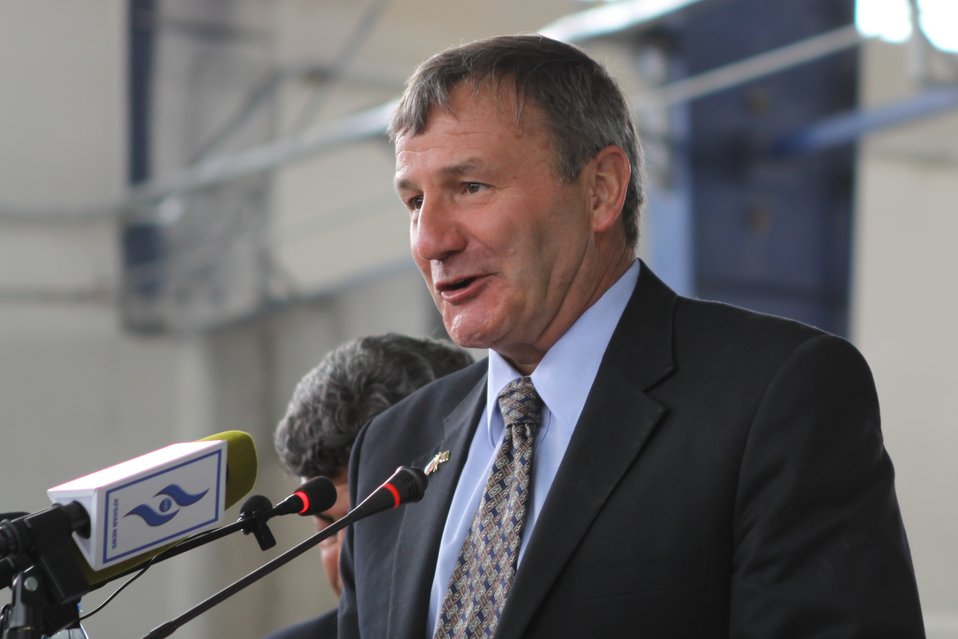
100525 Hirat Marble Conference 207